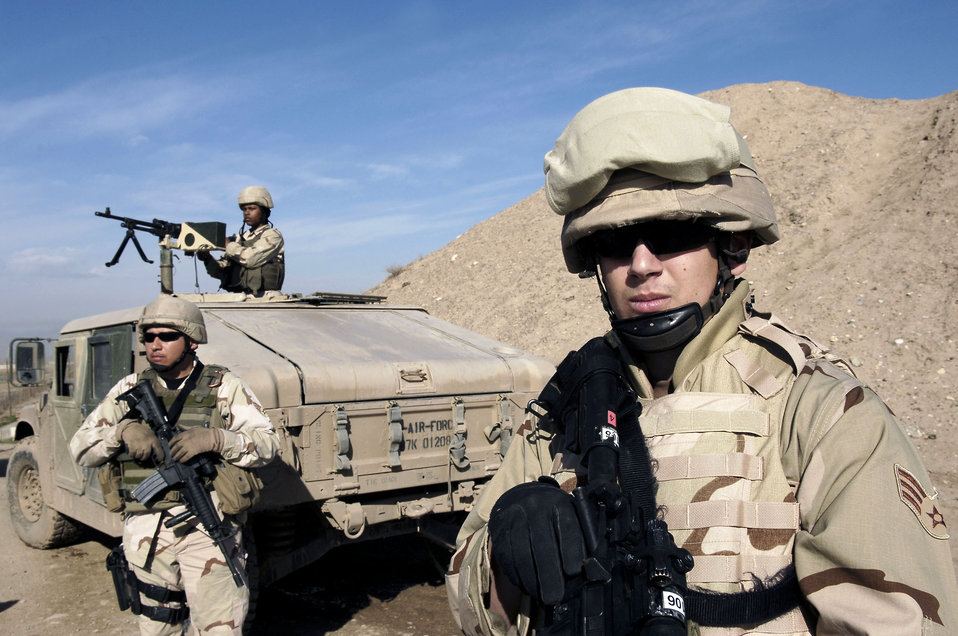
Maintaining security at Kirkuk

Senior Airmen Joshua Ramos and Alberto Nava and Airman 1st Class Shequita Spence (manning machine gun) conduct perimeter scans Feb. 13 at Kirkuk Air Base, Iraq. These Airmen, providing perimeter security for the base, are members of the 506th Expeditionary Security Forces Squadron.